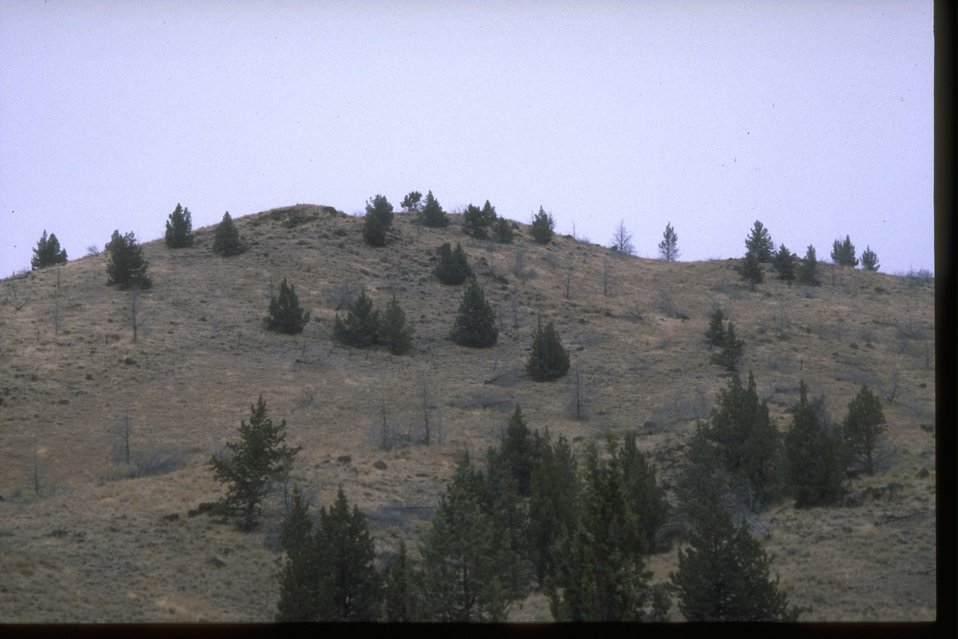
Juniper response to fire in central Oregon, north of Madras Highway 26.